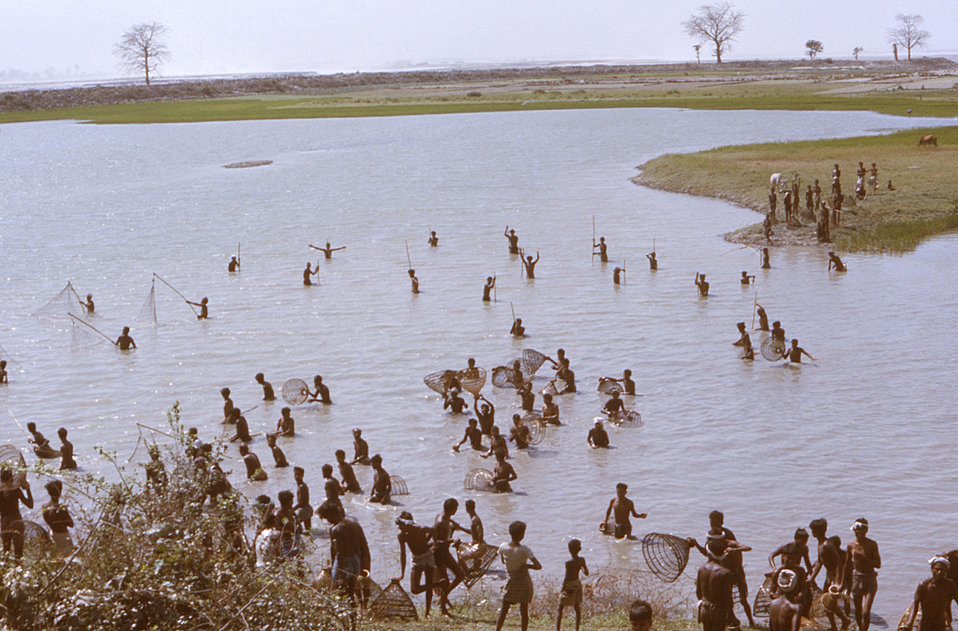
Photographed sometime in the early 1970s, during the worldwide smallpox eradication campaign, this image depicted numbers of Bengali townsfolk who'd gathered to net fish from an unknown body of water inside the country of Bangladesh.The Disease